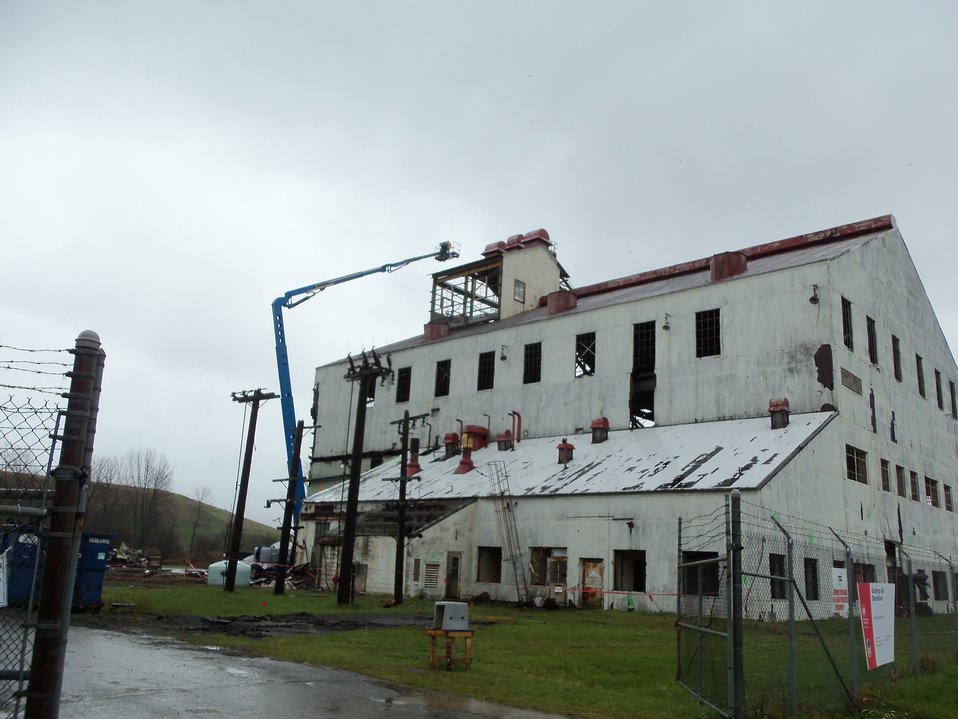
Building 401 roof asbestos removal.

Activities from the Niagara Falls Storage Site, which is associated with the former Lake Ontario Ordnance Works. Formerly Utilized Sites Remedial Action Program (FUSRAP), a program initiated in 1974 to identify, investigate and clean up or control sites that were part of the Nation's early atomic energy and weapons program. Activities at the sites that are eligible for FUSRAP were conducted by Manhattan Engineer District (MED) or the Atomic Energy Commission (AEC), both predecessors of the Department of Energy (DOE). The U.S. Army Corps of Engineers was assigned management of FUSRAP by Congress in 1997.